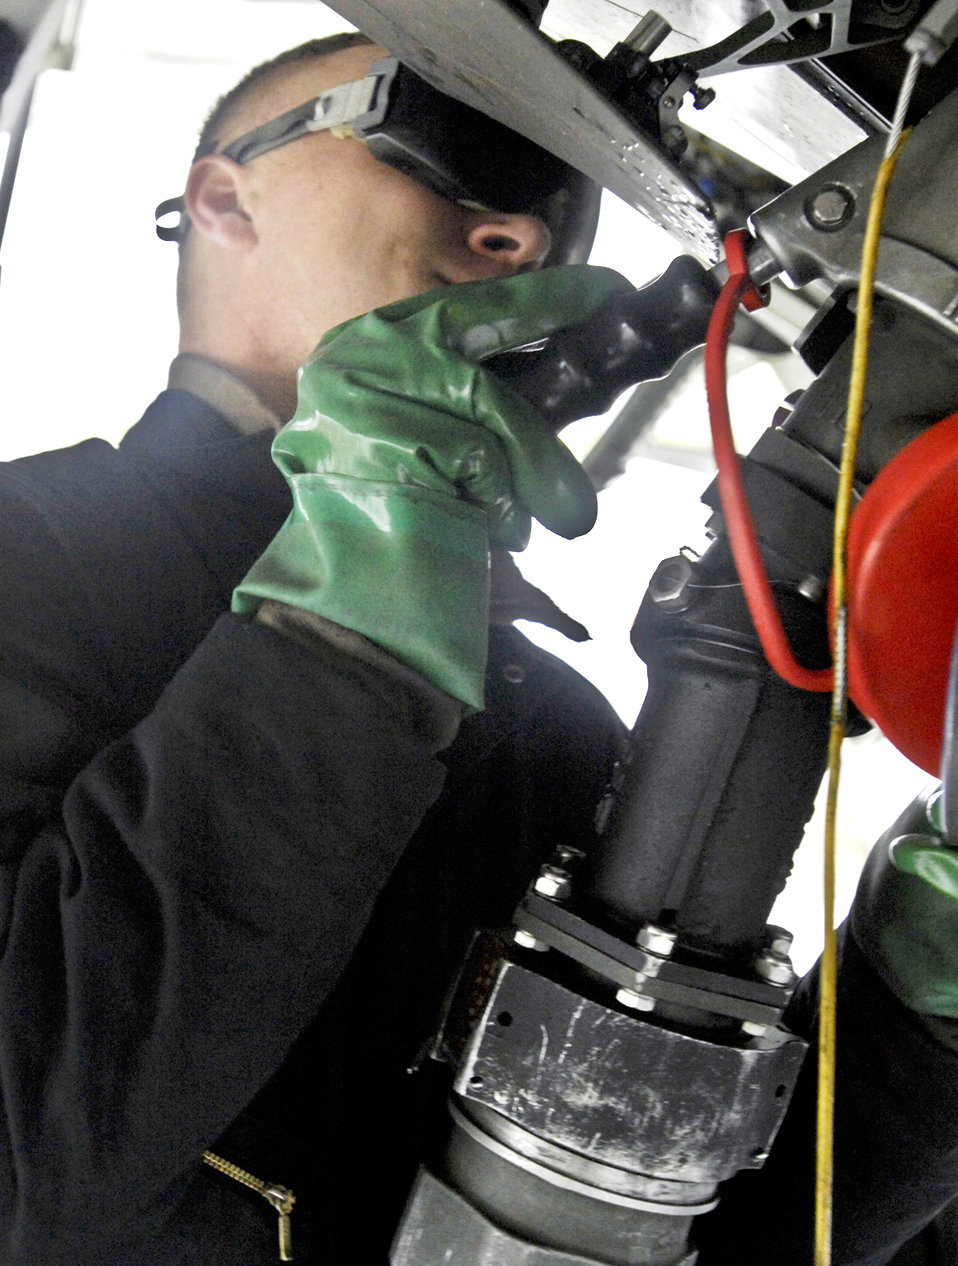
Airman hooks up fuel hose to F-22 Raptor

Airman 1st Class Alexander Chisholm hooks up a fuel hose to an F-22 Raptor Sept. 1, 2009, at Elmendorf Air Force Base, Alaska. Base members began using Plus 100 additive in their JP-8 aviation fuel Sept. 1. The additive helps prevent buildup in F-15 Eagle and F-22 Raptor engines; therefore it will reduce the amount of maintenance needed on those engines. Airman Chisholm is assigned to the 525th Aircraft Maintenance Unit.